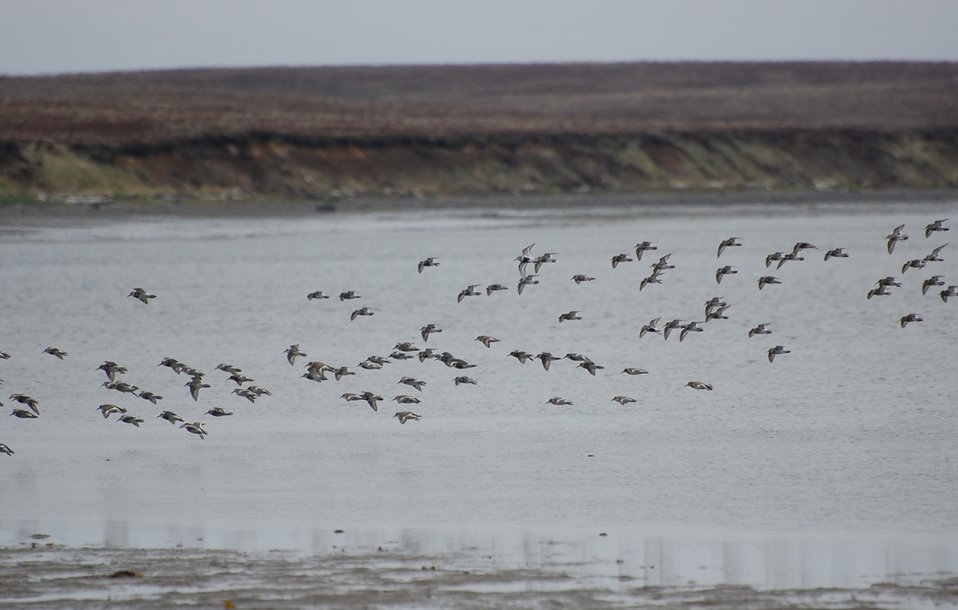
Rock Sandpiper flock

Kinzarof Lagoon, Izembek National Wildlife Refuge
Photo by Kristine Sowl,
USFWS, Public Domain